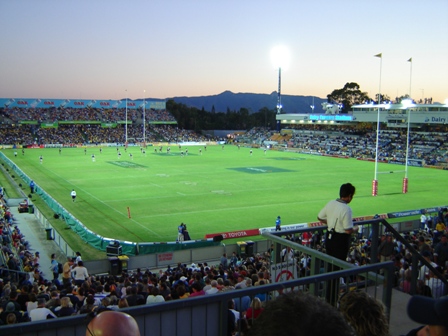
Dairy Farmers Stadium in May 2005. Photo taken by Dan Miles. en:Category:Townsville, Queensland